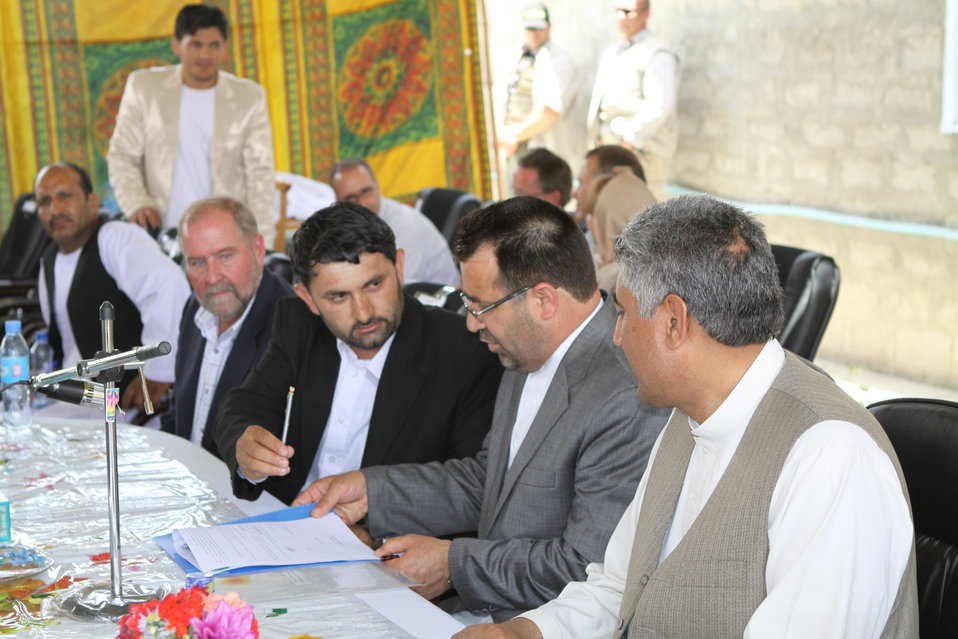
Bolan Poultry Farm